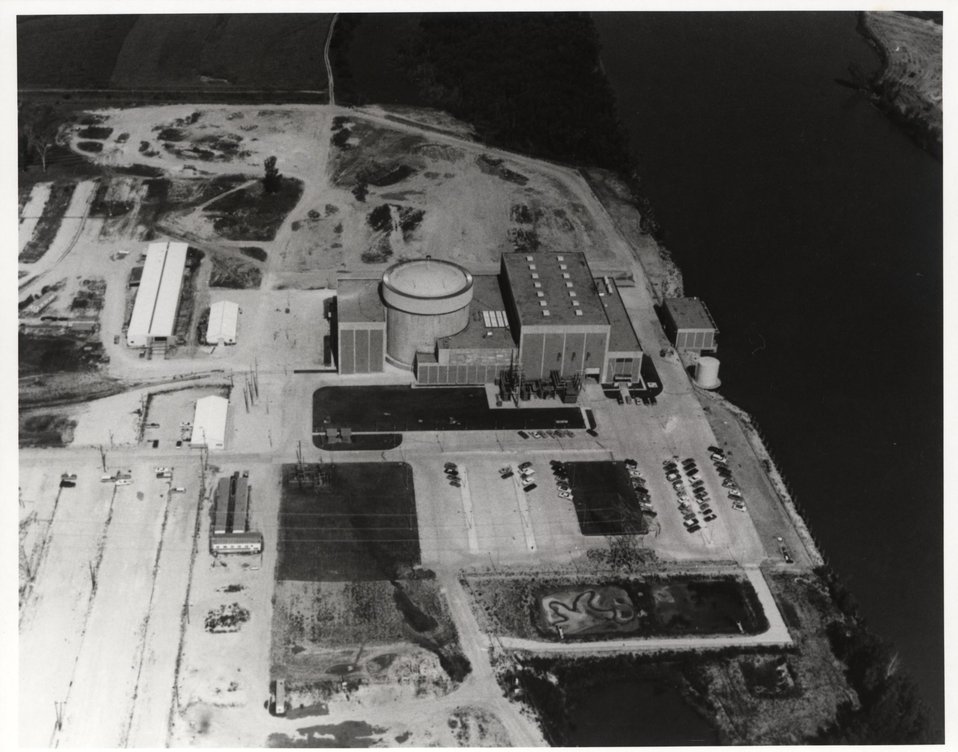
The Omaha Public Power District Fort Calhoun Nuclear Power Station located at Fort Calhoun, Nebraska. Circa 1974.